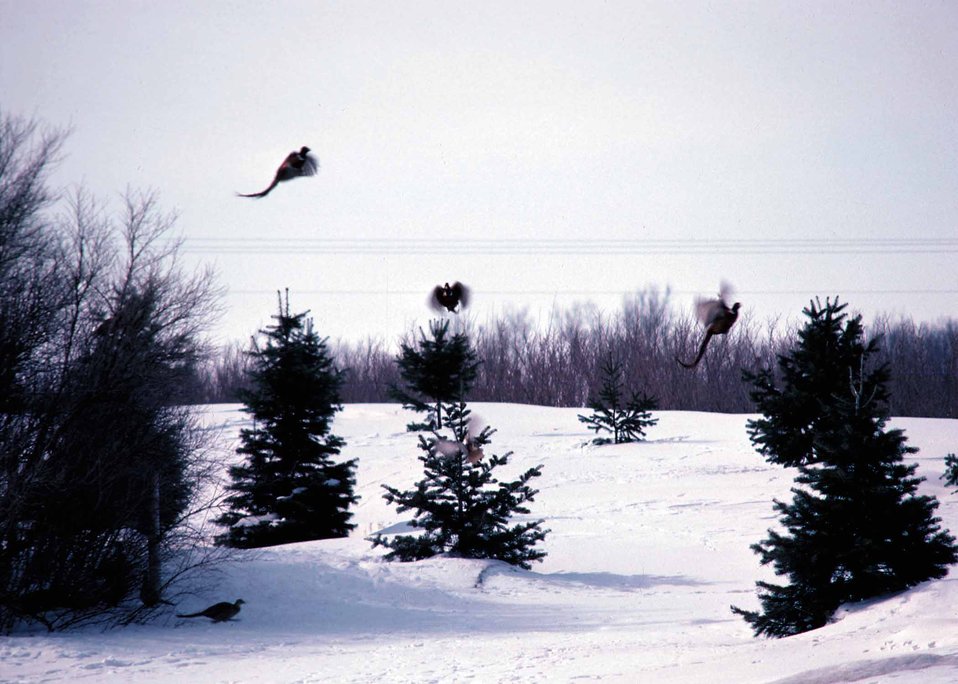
Farmstead windbreak in Boone County, Iowa, that had more than 100 pheasants in it during a winter with heavy snow.